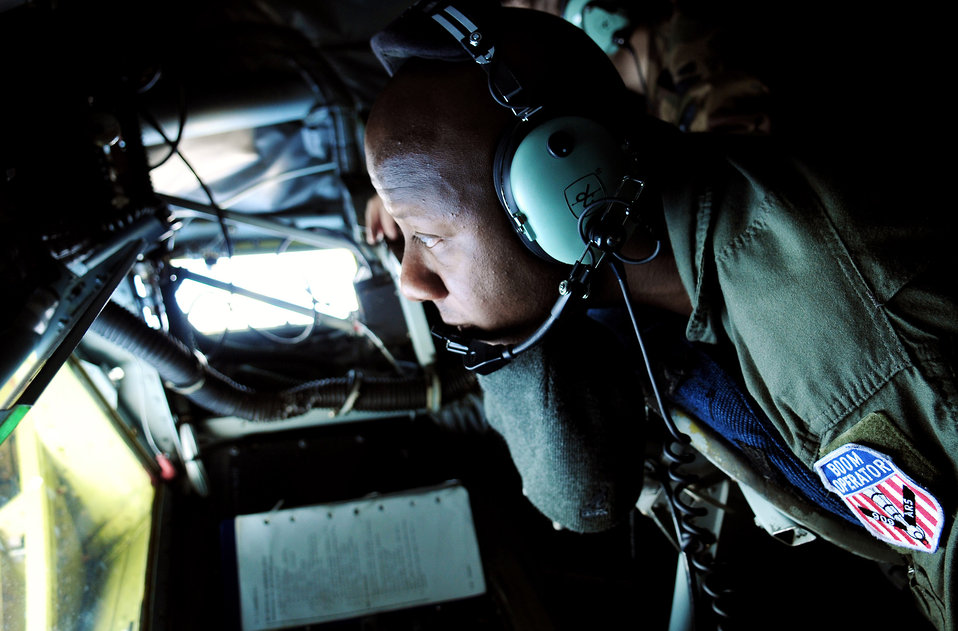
U.S., Japanese F-15 pilots train for Red Flag-Alaska

Staff Sgt. Ron McKinney guides the KC-135 Stratotanker boom for a Japan Air Self Defense Force F-15 as the pilot practices air refueling July 30 off the coast of Japan. The training is in preparation for JASDF participation in Red Flag-Alaska this year. Sergeant McKinney is a KC-135 boom operator with the 909th Air Refueling Squadron, Kadena Air Base, Japan.